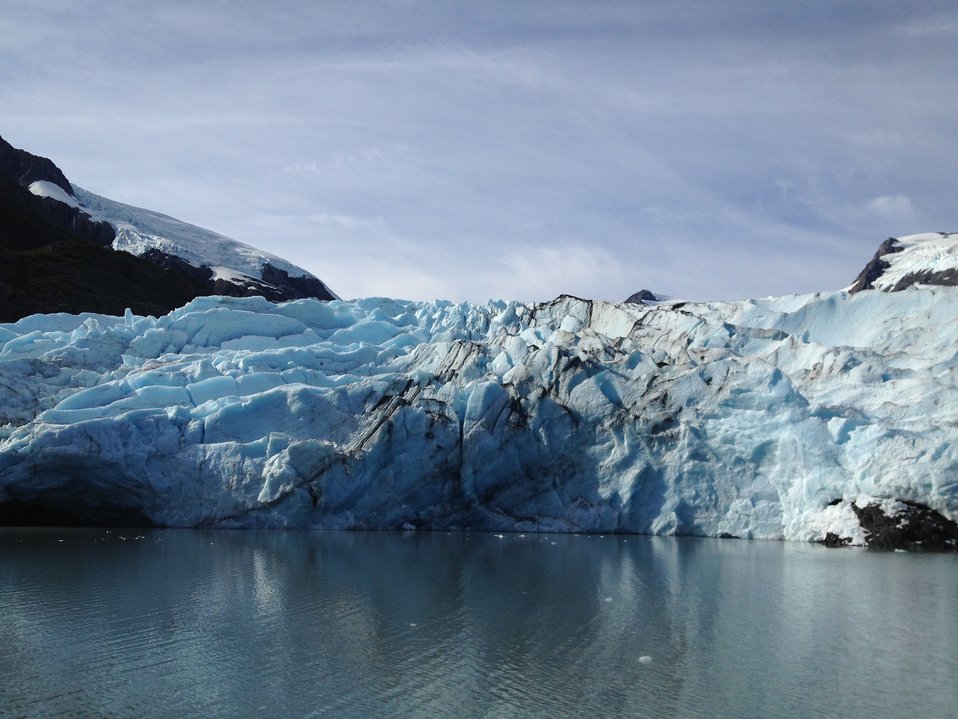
Administrator Gina McCarthy at Portage Lake Glacier, Alaska

On Monday, August 26 Administrator McCarthy visited the Portage glacier near Anchorage, Alaska to see first-hand some of the impacts of climate change.